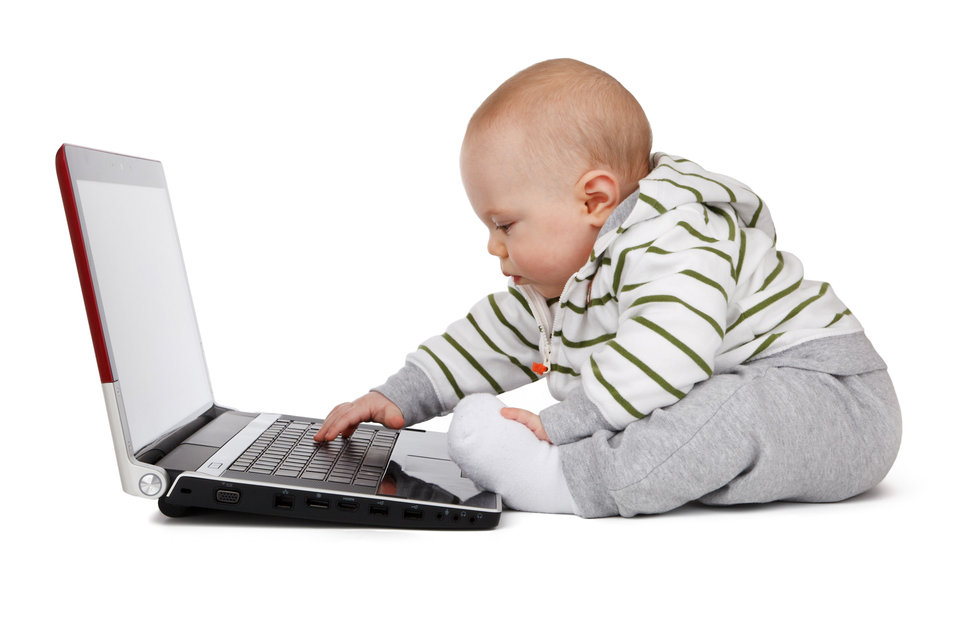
Baby working on a laptop

Baby working on a computer isolated on white background.